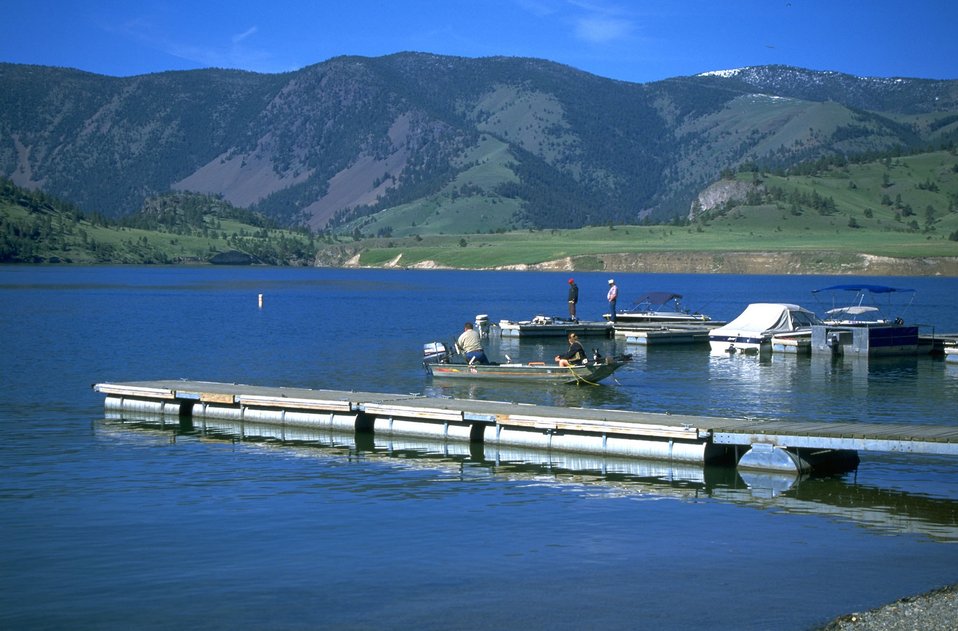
Boater at the marina at Log Gulch Campground